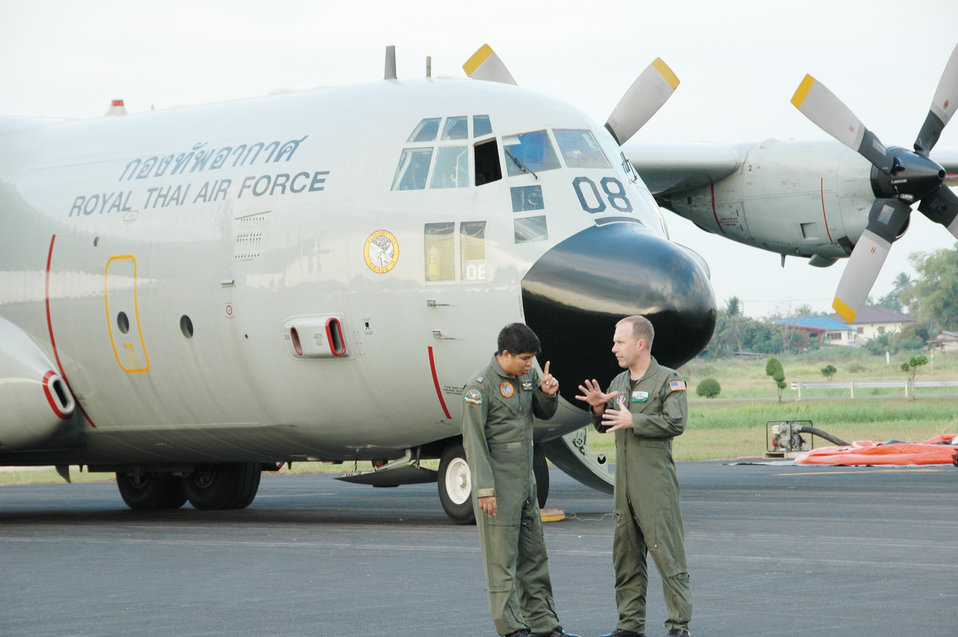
Lt. Col. James Banker discusses aerial firefighting with Royal Thai Air Force Squadron Leader

Lt. Col. James Banker discusses the challenges of flying the aerial firefighting mission with Squadron Leader Saraphongse Dibavadi, prior to a training mission involving a wet drop Jan. 25, 2010 at Phitsanulok Royal Thai Air Force Base, Thailand. Colonel Banker is the chief of current operations with the Air Force Reserve's 302nd Airlift Wing based at Peterson AFB, Colo. Mr. Dibavadi is the 601squadron deputy commander for the Royal Thai Air Force.